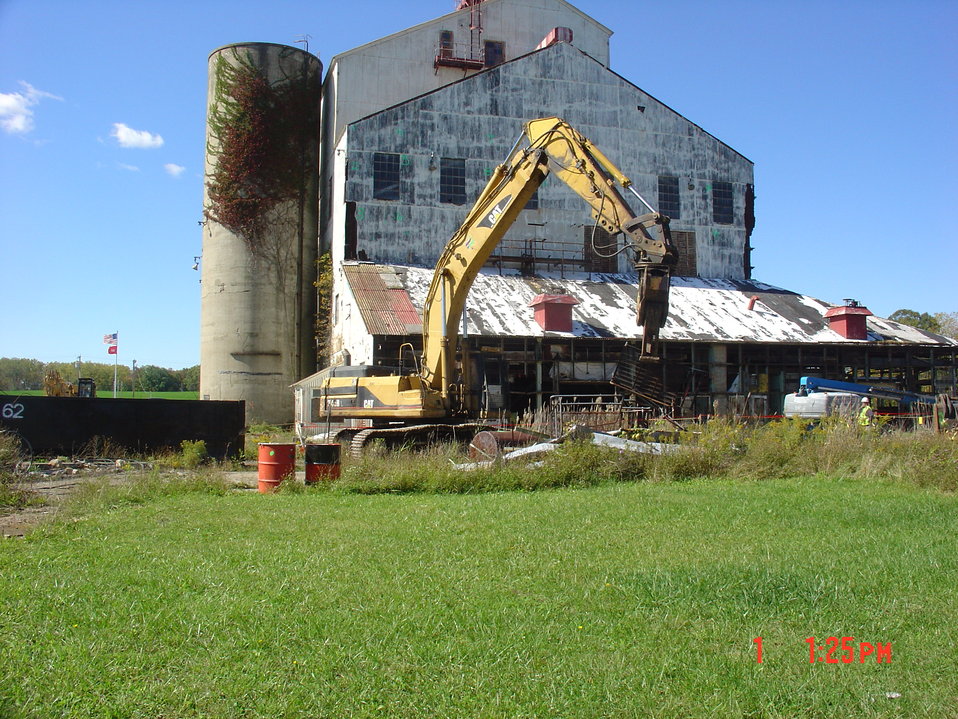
Building 401 grip removing siding.

Activities from the Niagara Falls Storage Site, which is associated with the former Lake Ontario Ordnance Works. Formerly Utilized Sites Remedial Action Program (FUSRAP), a program initiated in 1974 to identify, investigate and clean up or control sites that were part of the Nation's early atomic energy and weapons program. Activities at the sites that are eligible for FUSRAP were conducted by Manhattan Engineer District (MED) or the Atomic Energy Commission (AEC), both predecessors of the Department of Energy (DOE). The U.S. Army Corps of Engineers was assigned management of FUSRAP by Congress in 1997.